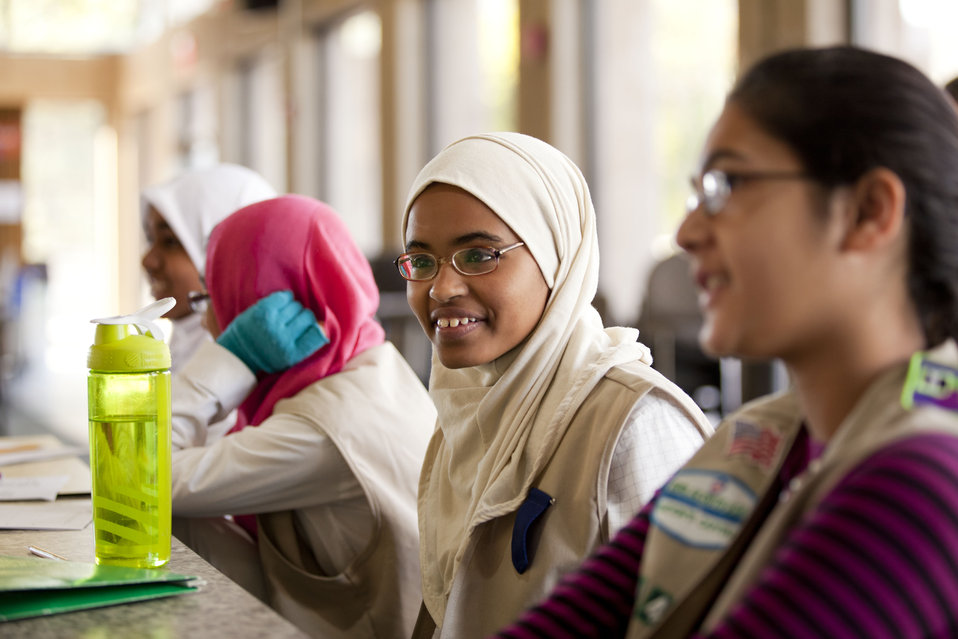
Girl Scouts ask questions about college life during their class on nuclear science.